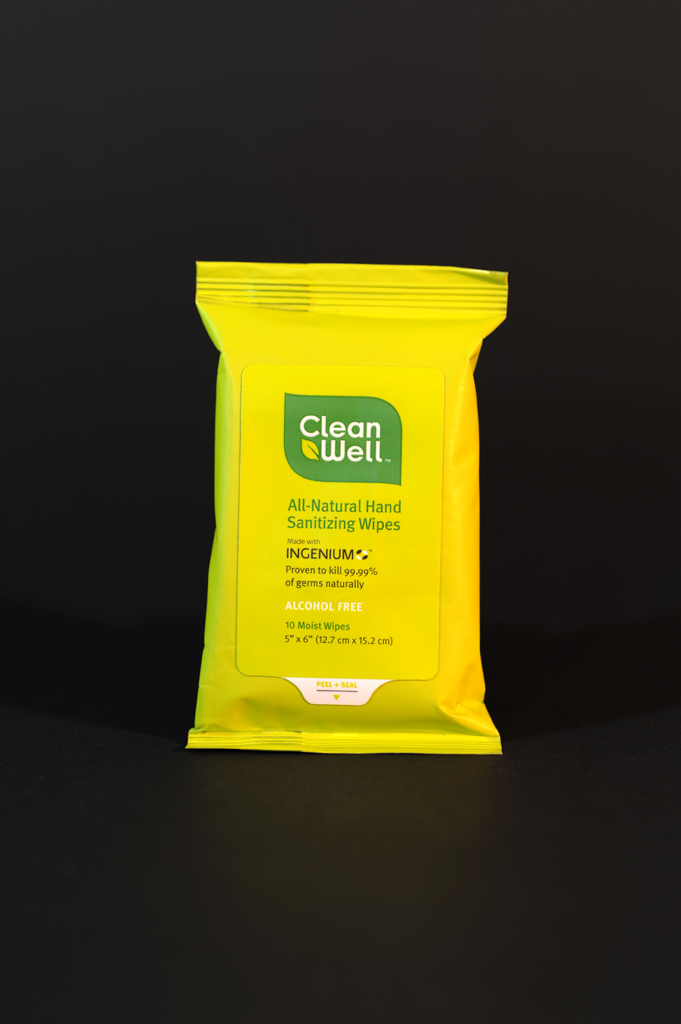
Hand Sanitizers Carry Unproven Claims to Prevent MRSA Infections - Product Photo

The claims on this product that it prevents serious infections violate federal regulations, says FDA. The agency has warned the company to correct the violations or risk being subject to legal action. Read this FDA Consumer Update: www.fda.gov/ForConsumers/ConsumerUpdates/ucm251816.htm